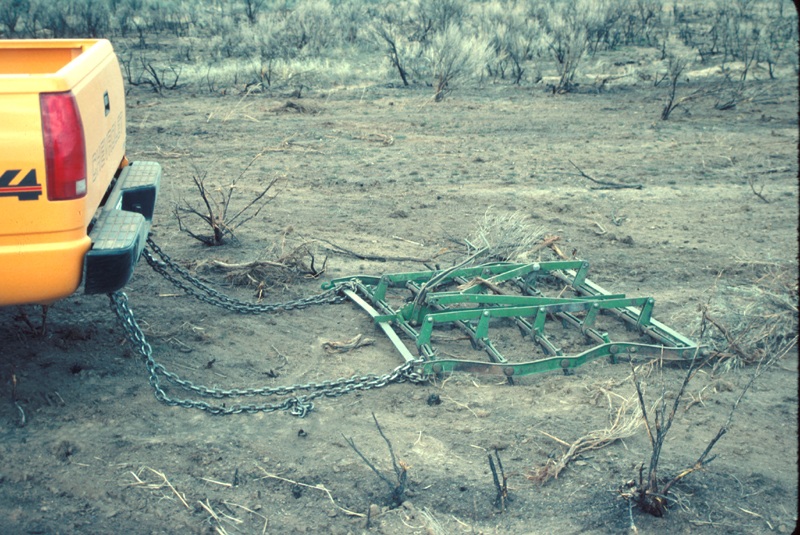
Orchard Harrow Range Restoration Project Lower Snake River District